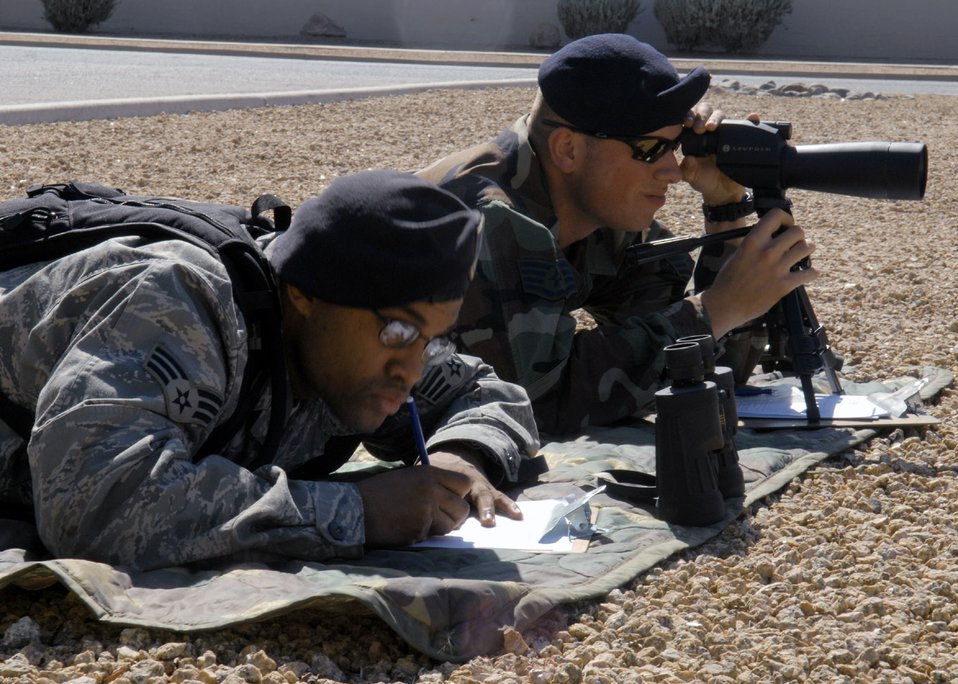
Security forces fire with precision

Staff Sgt. Anthony Quinn and Senior Airman Benny Prescott train on target detection and sketching to prepare them for close precision engagement training April 3. Target detection and sketching are two kinds of techniques used by sharpshooters and is used to find small objects and potential targets. Sergeant Quinn and Airman Prescott are a patrolmen from the 56th Security Forces Squadron at Luke Air Force Base, Ariz..